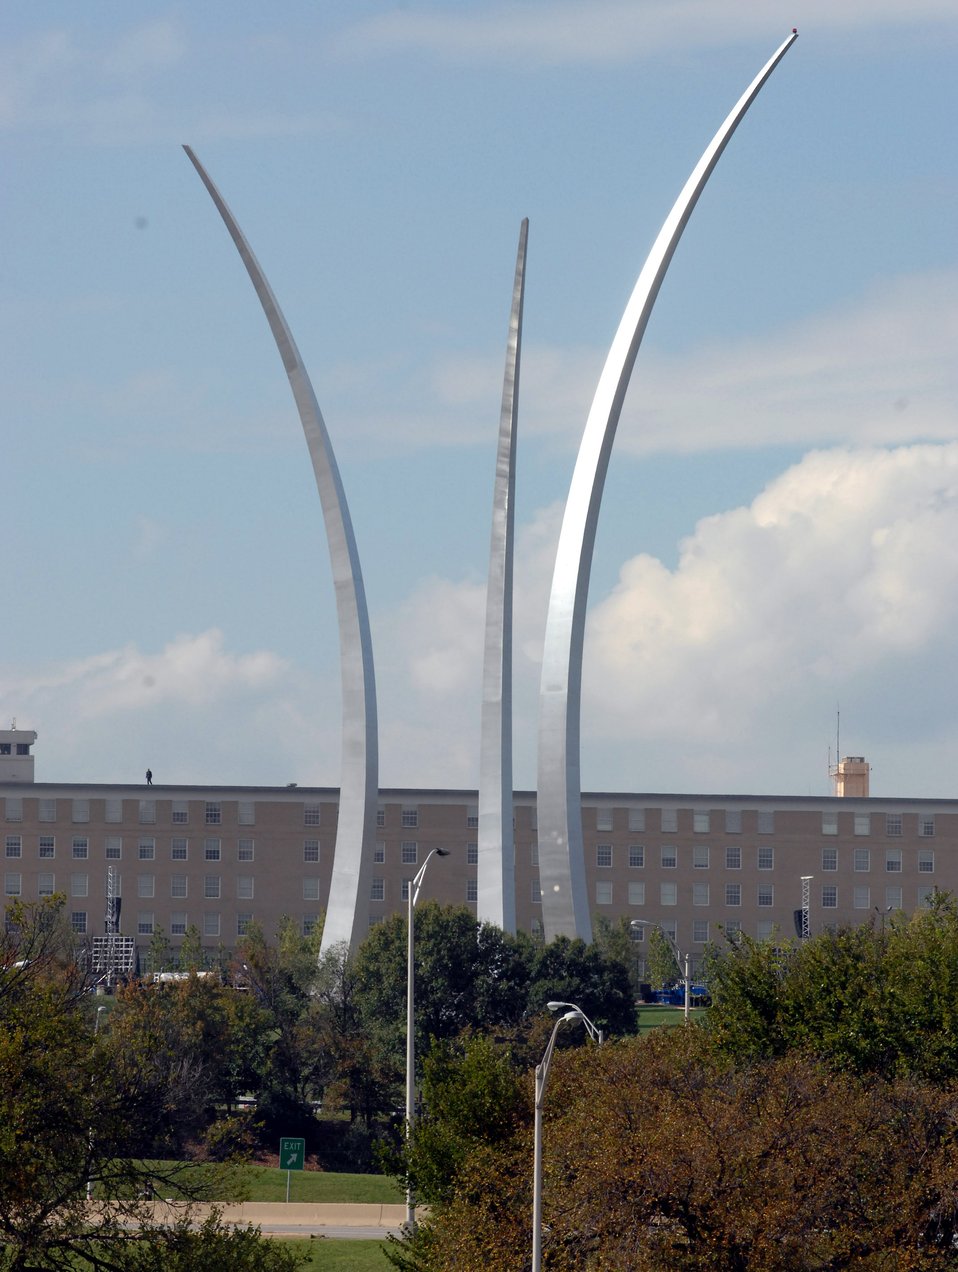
Thunderbirds practice over Air Force Memorial

The Air Force Memorial will be officially opened Oct. 14 with dedication ceremonies scheduled throughout the day, including a flyover of the Air Force Thunderbirds demonstration team.